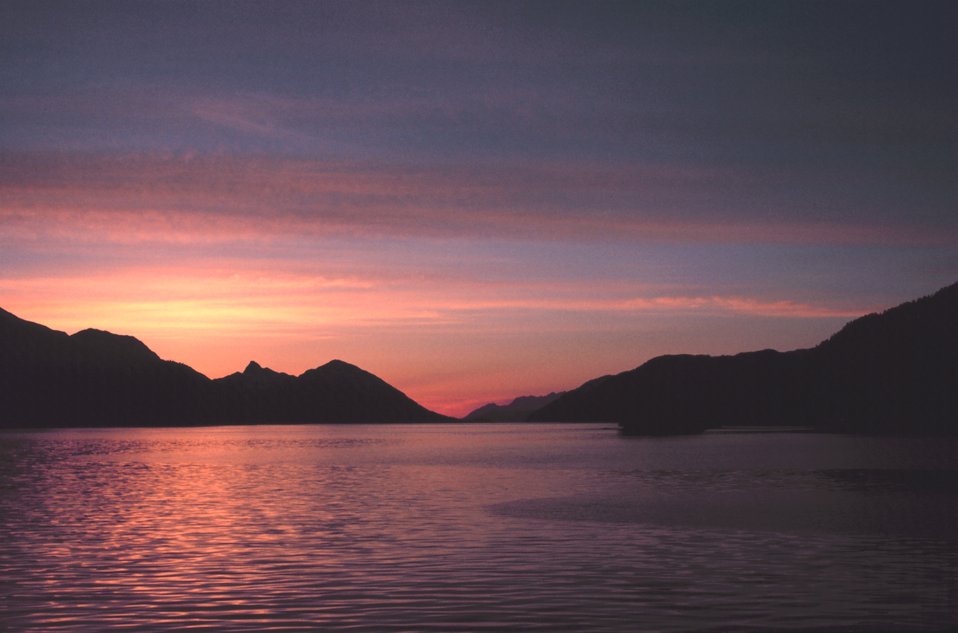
A Southeast Alaska sunset.